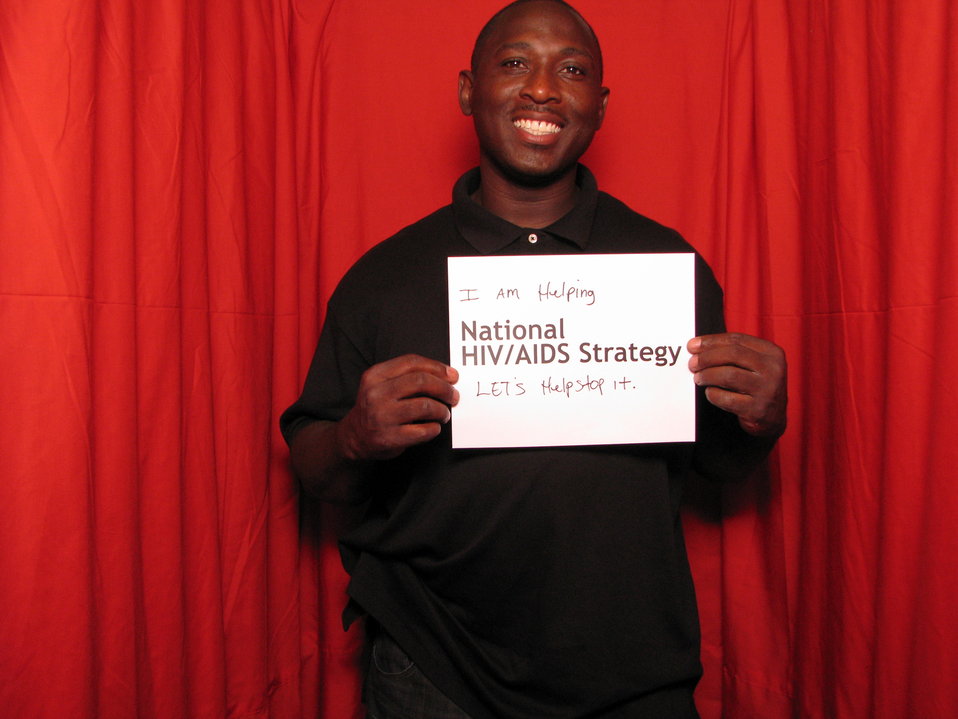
I am Helping the National HIV/AIDS Strategy. LET'S help stop it.

From the AIDS.gov photo booth at the U.S. Conference on AIDS, September 2010 (Orlando, FL).